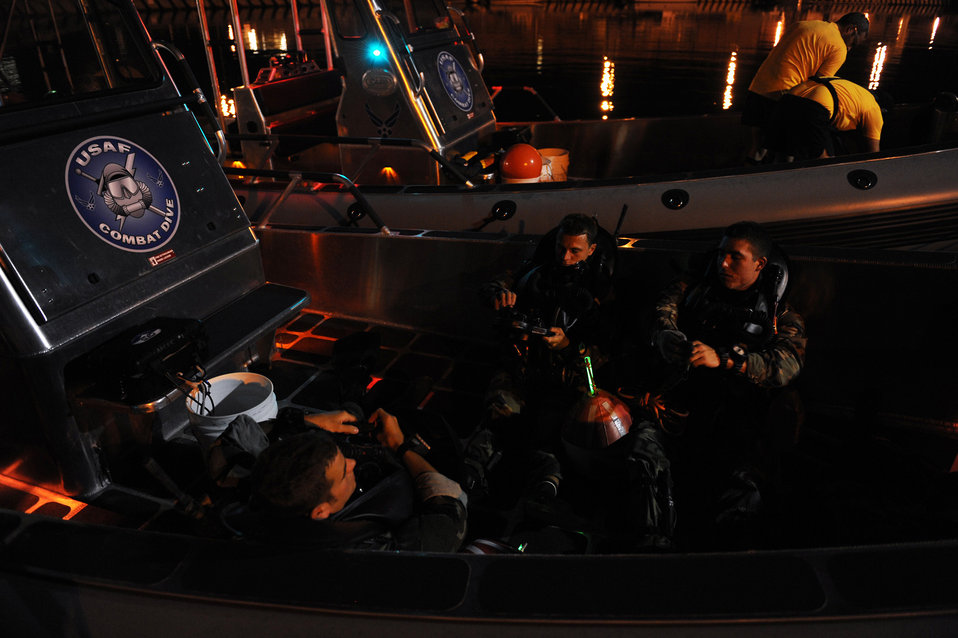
Tyndall Airmen prepare for morning dive

Combat controllers in training wait to be dropped off to do an early morning dive during their combat dive course June 10, 2010 at Panama City Beach, Fla. The Airmen are assigned to the 342nd Training Squadron Det 2.